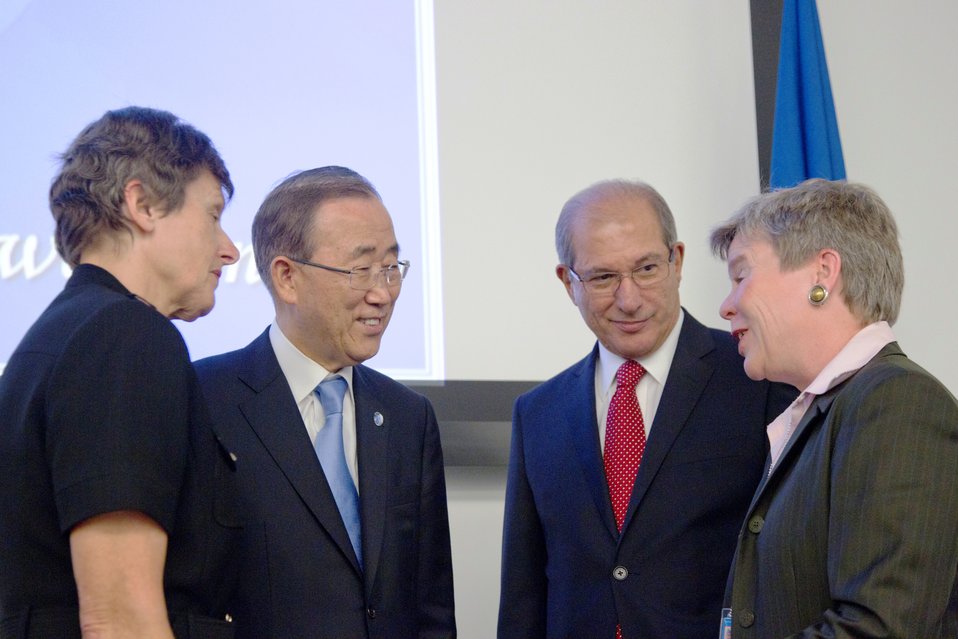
Commemorating 15 Years of the Chemical Weapons Convention

From right to left: Acting Under Secretary for Arms Control and International Security Rose Gottemoeller; OPCW Director-General, Ambassador Ahmet Üzümcü; UN Secretary-General Ban Ki-moon; and Ms. Angela Kane, High Representative of the United Nations Secretary-General for Disarmament Affairs, meet at a high-level meeting at the United Nations in New York on October 1, 2012, to commemorate the 15th anniversary of the OPCW, with the theme: “Fifteen Years of the Chemical Weapons Convention: Celebrating Success. Committing to the Future.”